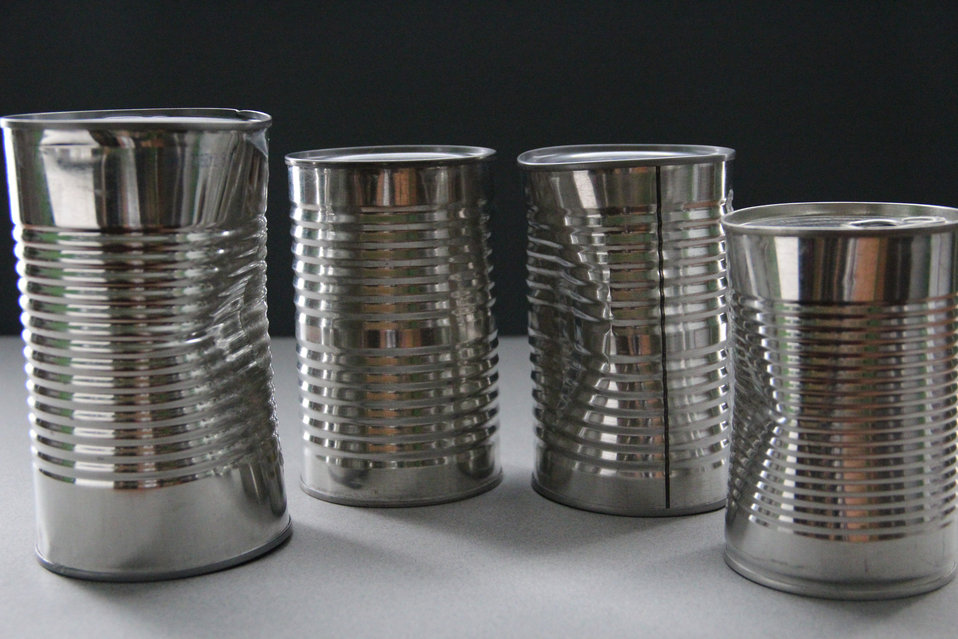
Depicted here, are four unlabeled metal cans containing unknown foods. The labels had been removed in order to remove any identifying data. However, it is important to note that three of the four cans were dented, which should raise concern for consumers as to the safety of the contents, and whether these foods should be eaten.